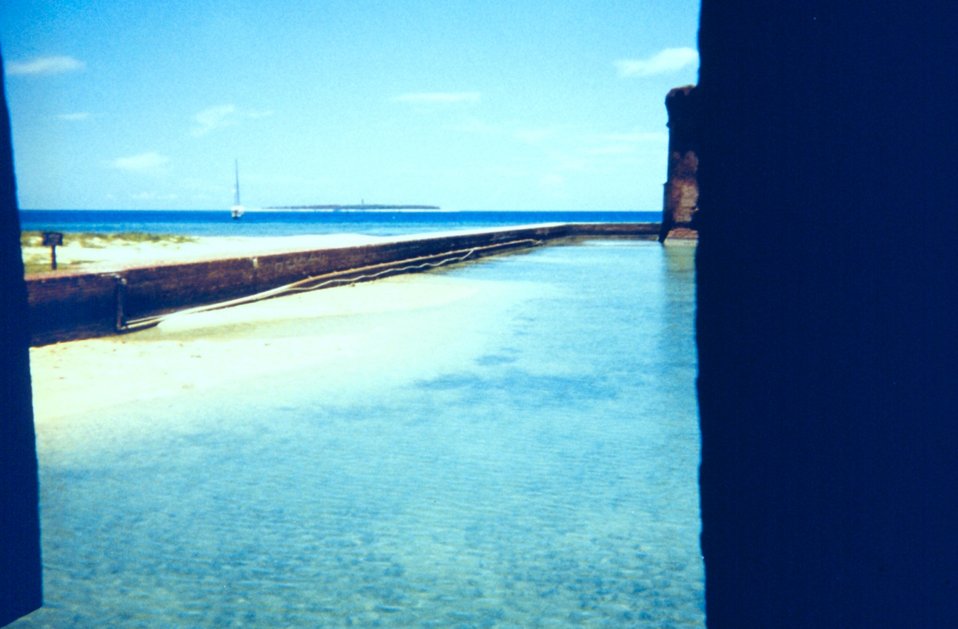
Looking towards Sand Key